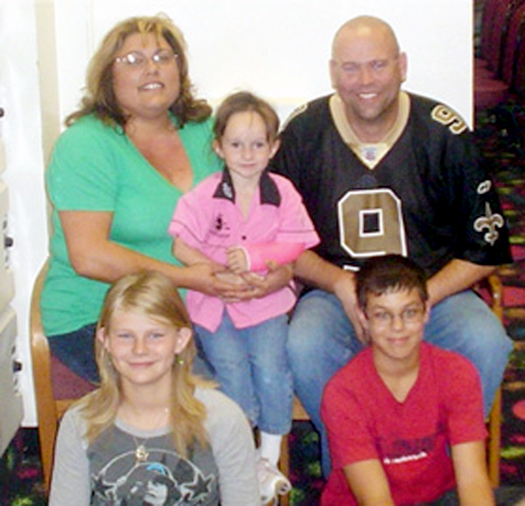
Program helps military families adopt

Master Sgt. Kipp M. Bourgeois and his wife, Christina, pose for a picture with their three children: Emalie, 14; Kameron, 12; and SkylarRae, 3. All three children were adopted with help from the Defense Department's adoption reimbursement program.